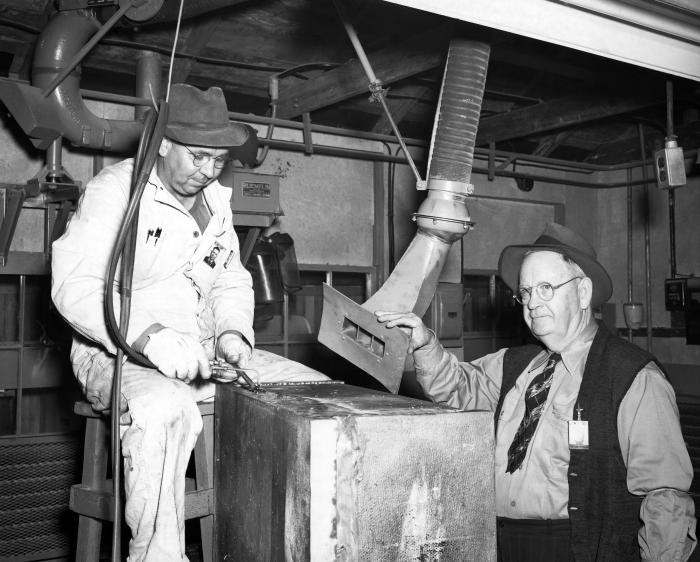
This July 24, 1950 photograph was provided by the Center for Disease Control's (CDC), National Institute for Occupational Safety and Health (NIOSH). The image depicted an employee burning lead in a lead-fabrication shop in Oak Ridge, Tennessee. Note that the worker was using personal protective equipment consisting of gloves, coveralls, and eye protection, while at his work station. The man manipulating the ventilator was a U.S. Public Health Service (USPHS) employee who at the time was monitoring occupational safety conditions.Workers can be exposed to lead through inhalation of fumes and dusts, as well as through ingestion as a result of lead-contaminated hands, food, drinks, cosmetics, tobacco products, and clothing. Furthermore, workers can take lead home on their clothes, skin, hair, tools, and in their vehicles, potentially exposing their families to this element's harmful health effects.